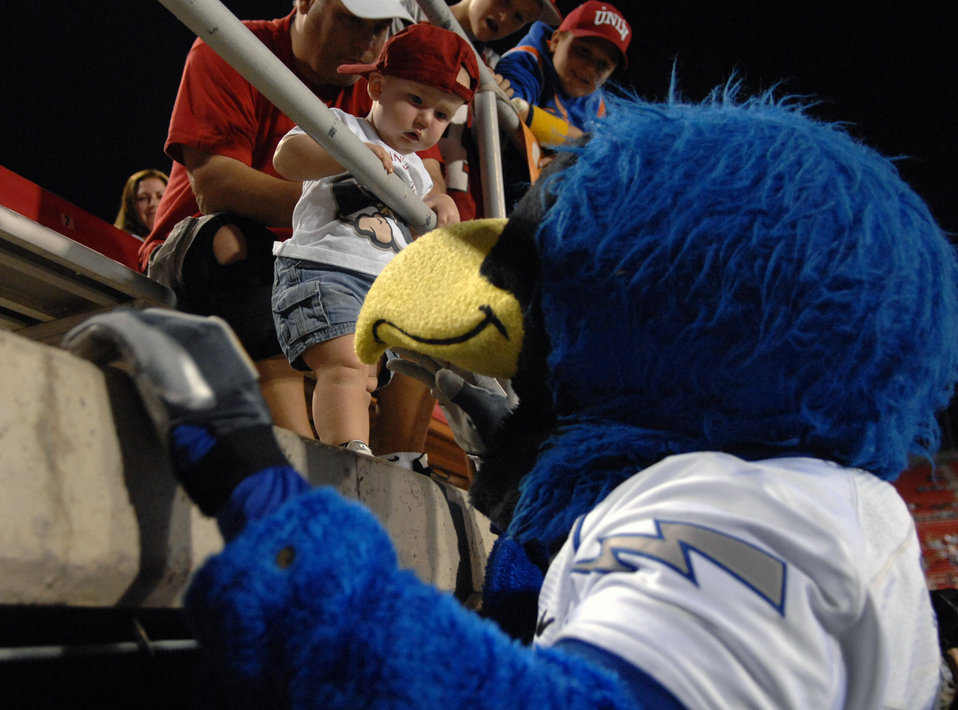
I'm friendly to future cadets

The U.S. Air Force Academy mascot, The Bird, greets 10-month-old Conner Nelson during the Air Force and University of Nevada, Las Vegas football game Oct. 18 in Las Vegas. The Academy Falcons defeated the Rebels 29-28 and improved to 5-2 on the season.